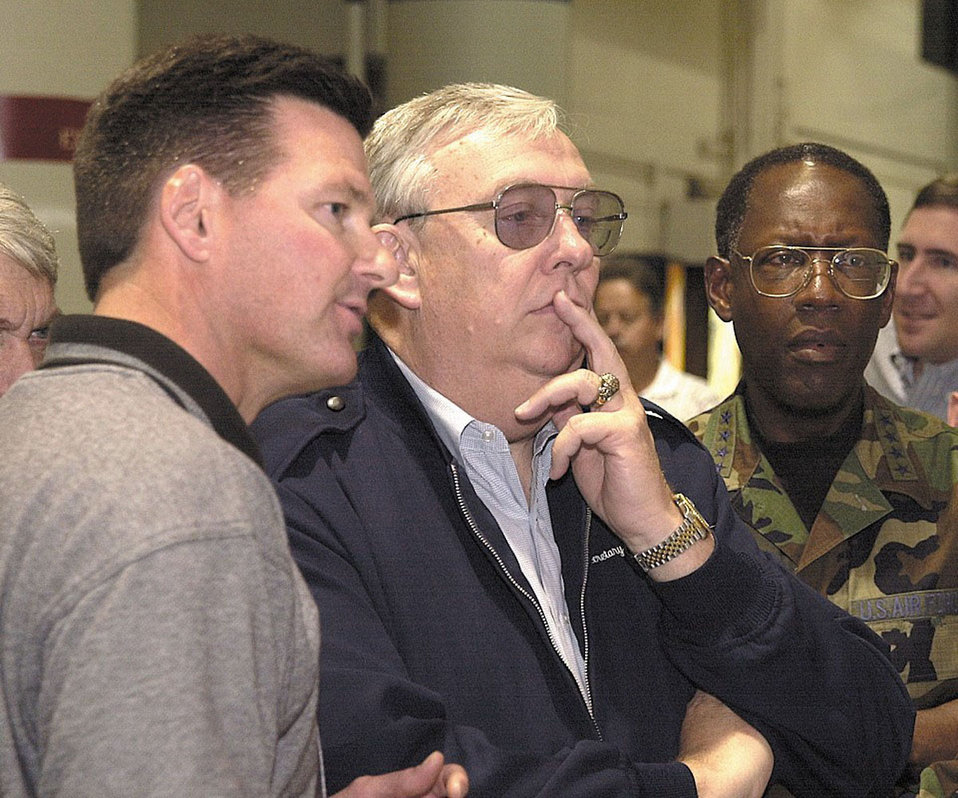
Secretary Visit

HILL AIR FORCE BASE, Utah -- Air Force Secretary Dr. James G. Roche answers questions during a visit here Oct. 15. Roche, who was assisted by acting Command Chief master Sgt. Wanda Newell, addressed more than 700 junior enlisted and officers during his visit.